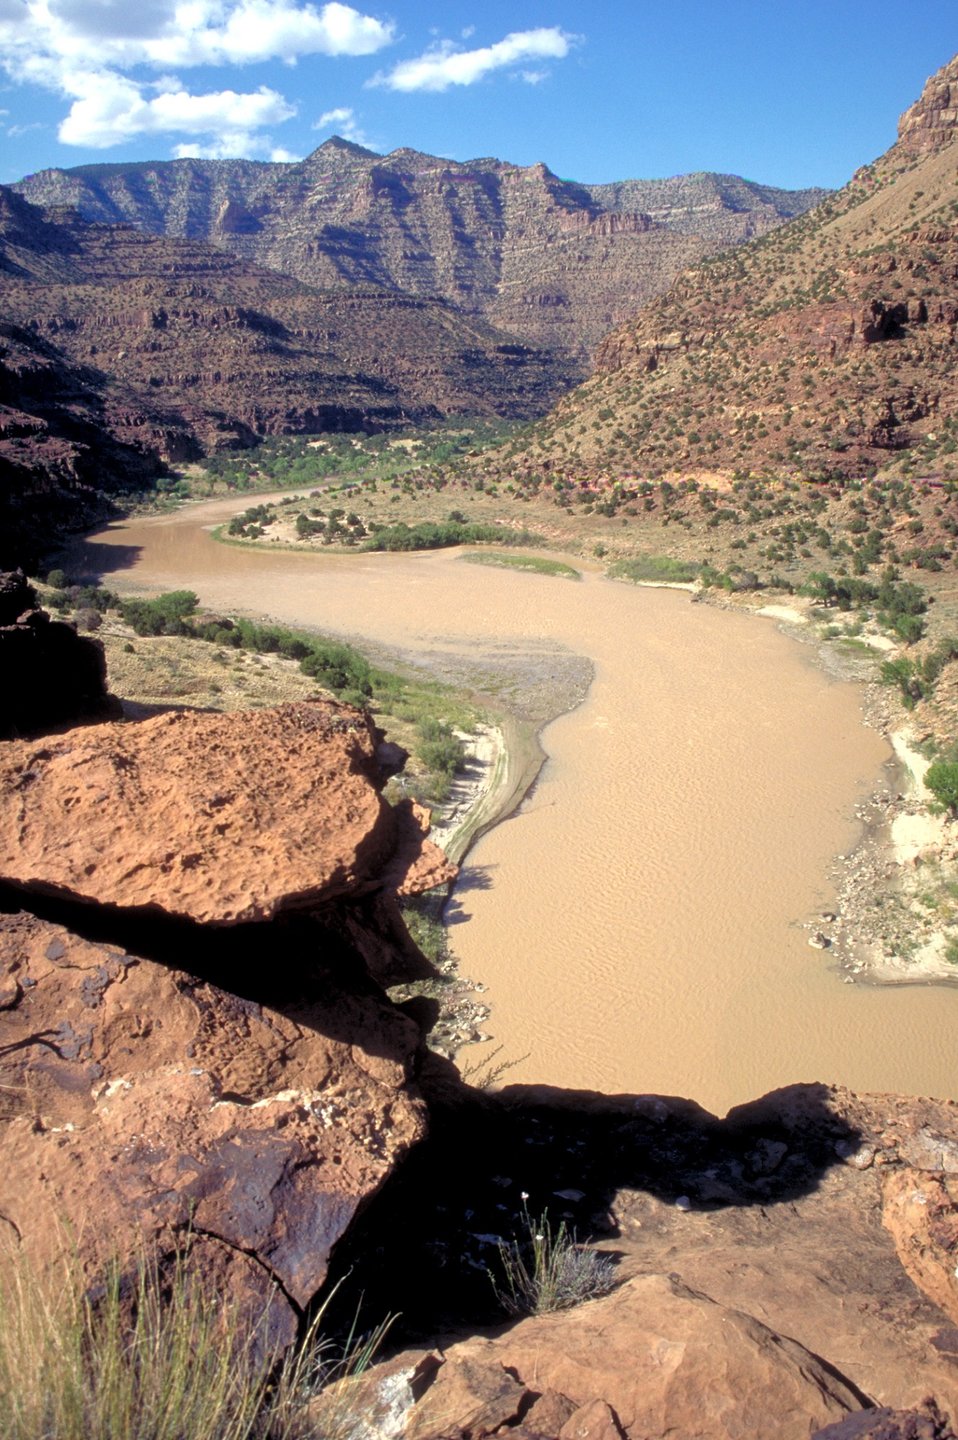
Desolation/Gray Canyons near Price, Utah.